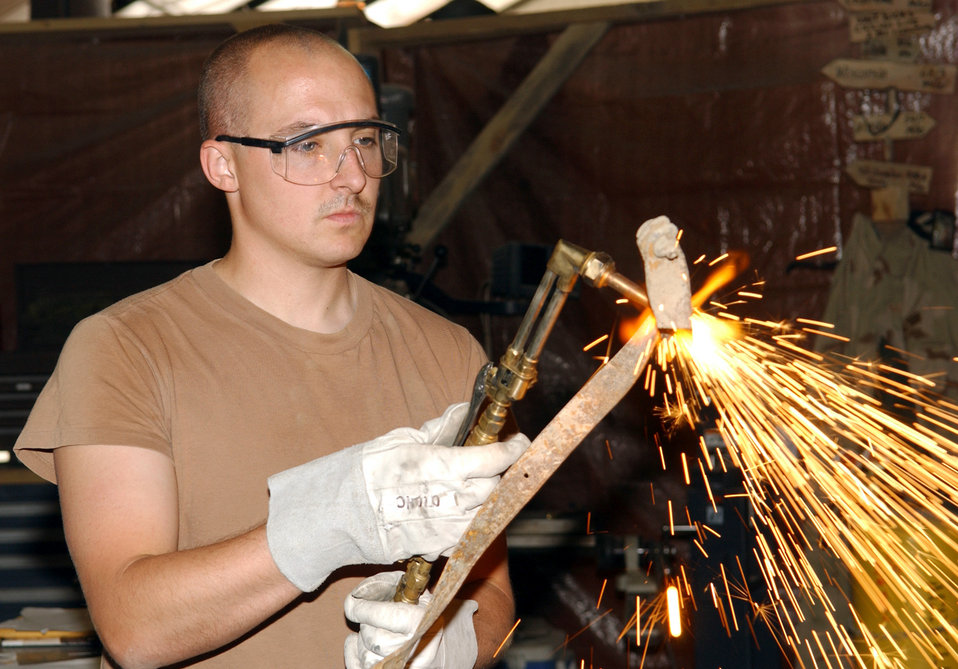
If you break it, they will come

BAGRAM AIR BASE, Afghanistan -- Senior Airman Brian Wakelee uses a torch to cut brackets from metal salvaged during the repair of an Army nitrogen cart. He is assigned to the 455th Expeditionary Aircraft Maintenance Squadron's fabrication branch here.